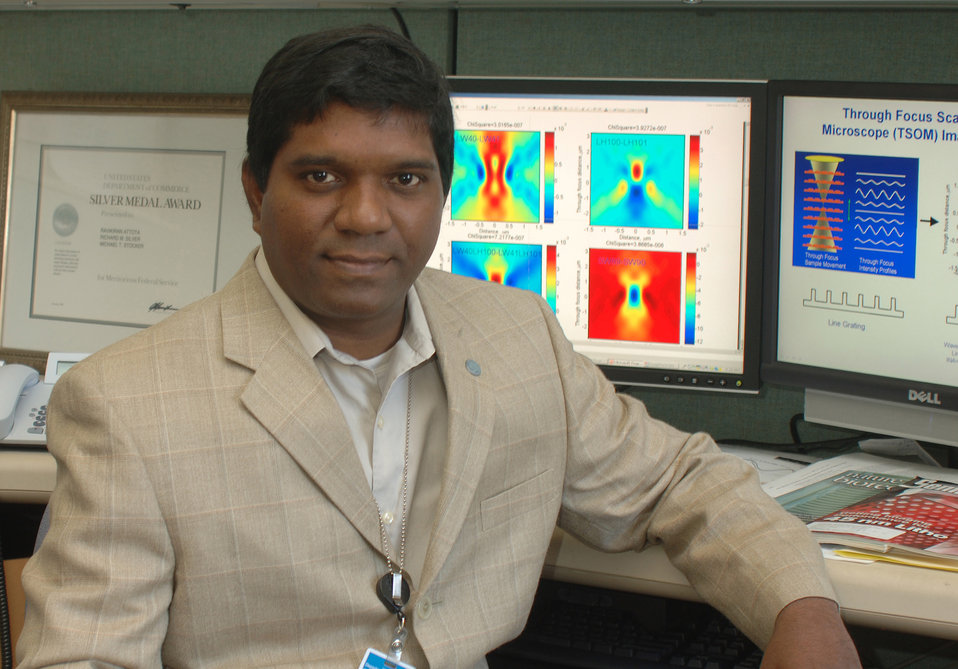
NIST Nanoscale Dimensioning Technique Wins RandD 100 Award

Ravikiran Attota, a lead researcher in NIST's Precision Engineering Division, won an R&D 100 Award for his development of the Through-Focus Scanning Optical Microscopy (TSOM), which has applications that cut across a range of industries, from biotechnology to semiconductors and photonics.